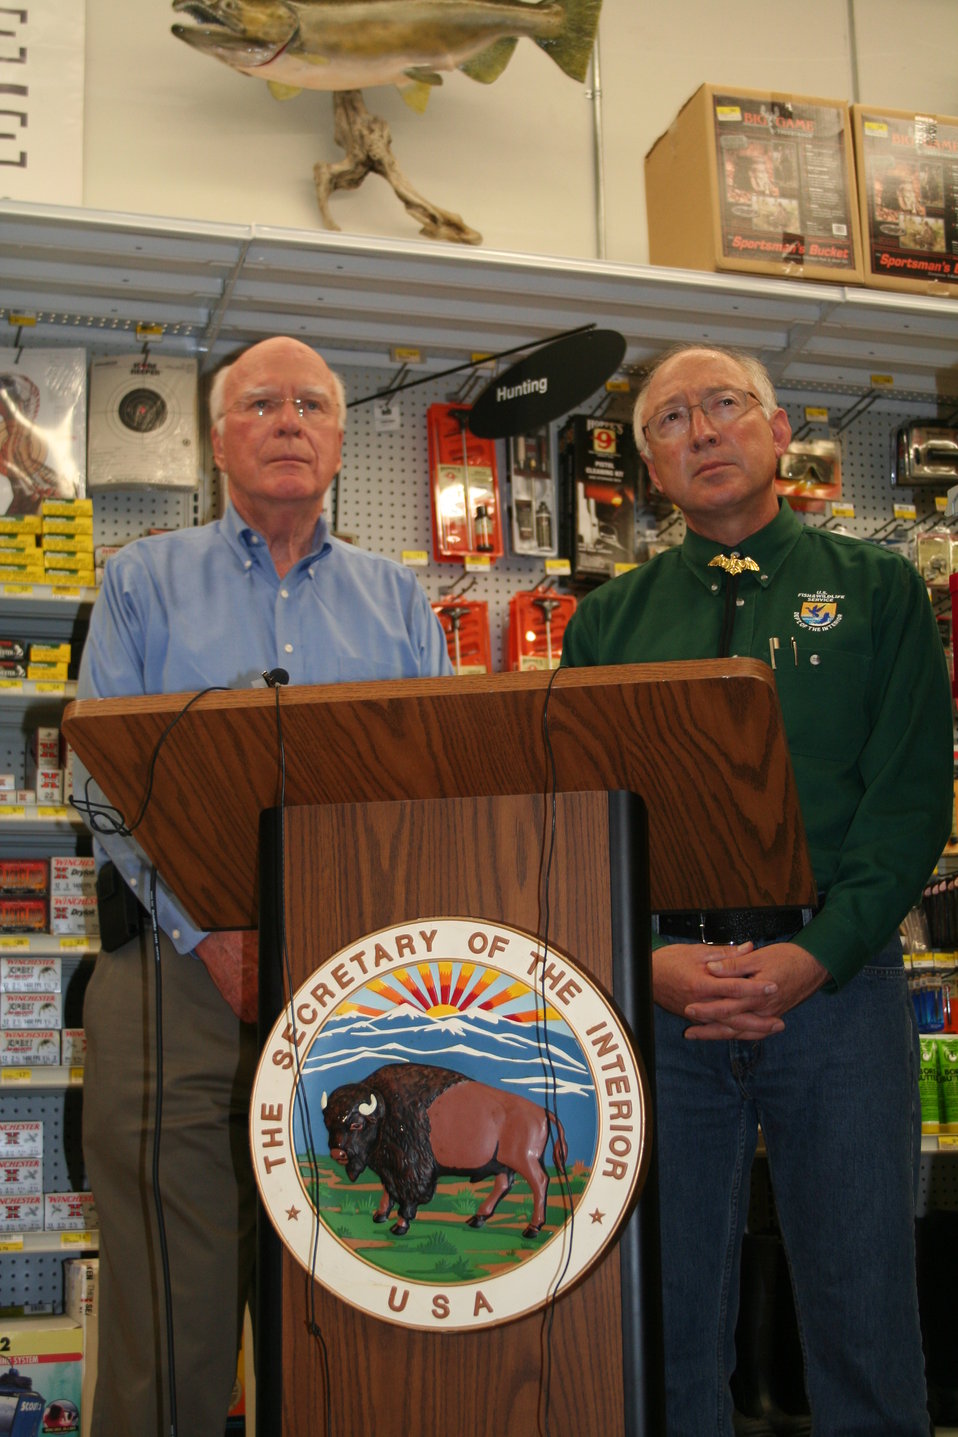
Senator Leahy and Secretary Salazar take questions

Senator Leahy (VT, left) and Department of Interior Secretary Salazar (right) listen to questions from media on sea lamprey control.